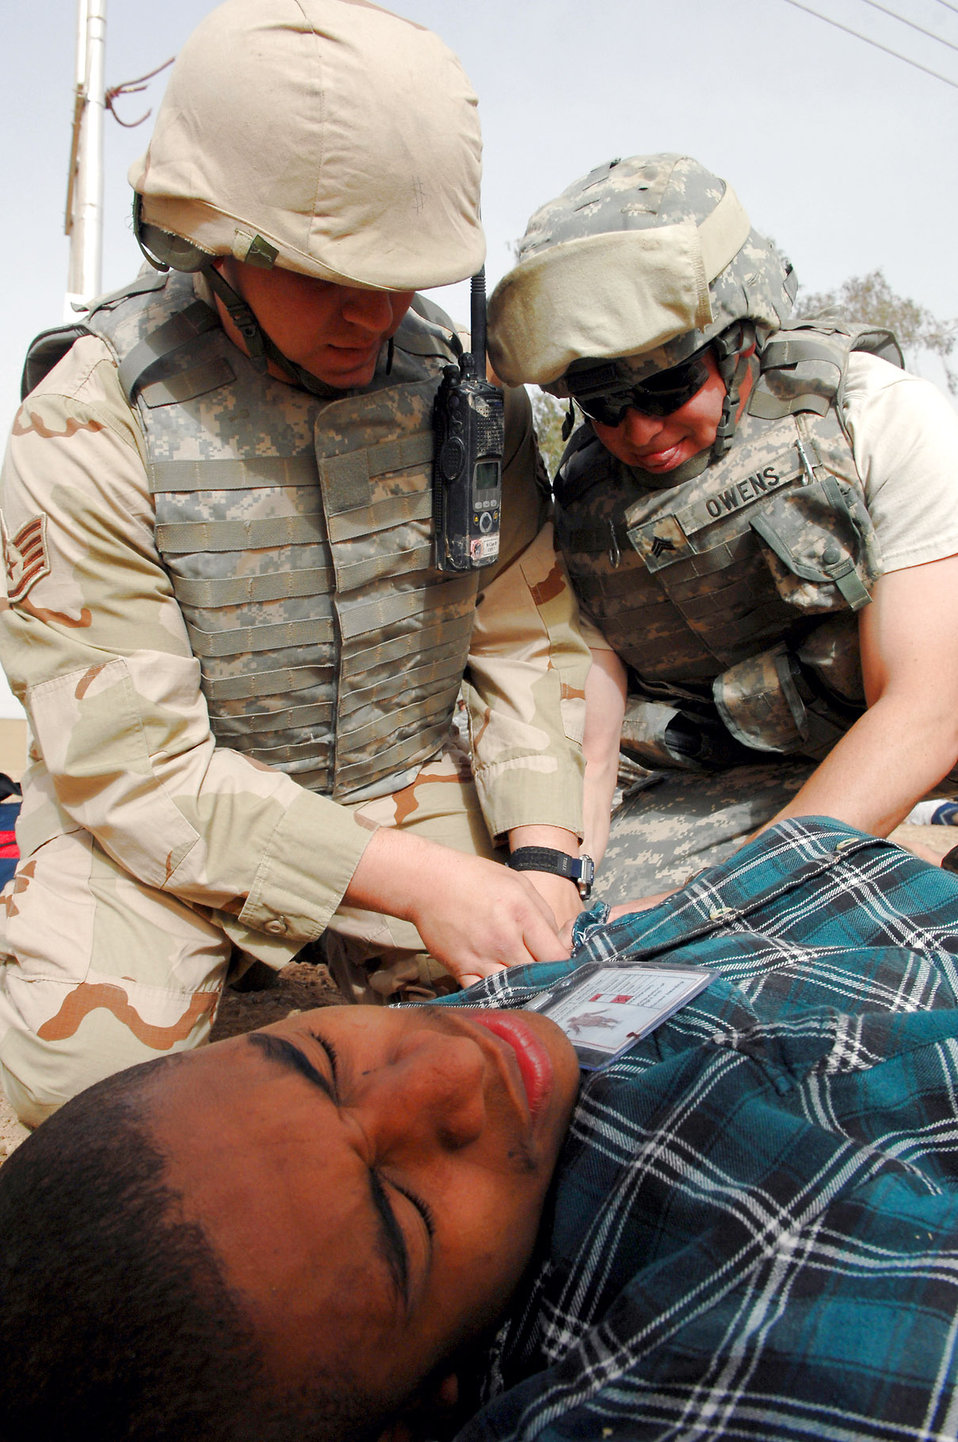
Worst case scenario

Air Force and Army emergency responders treat a simulated battle wound on Airman 1st Class Therrion Grooms by placing a tourniquet on his left arm during a mass casualty battle drill March 31 at Balad Air Base, Iraq. The drill was held to test the abilities of base members for an emergency situation. Airman Grooms is a 332nd Expeditionary Logistics Readiness Squadron supply manager deployed from Luke Air Force Base, Ariz.